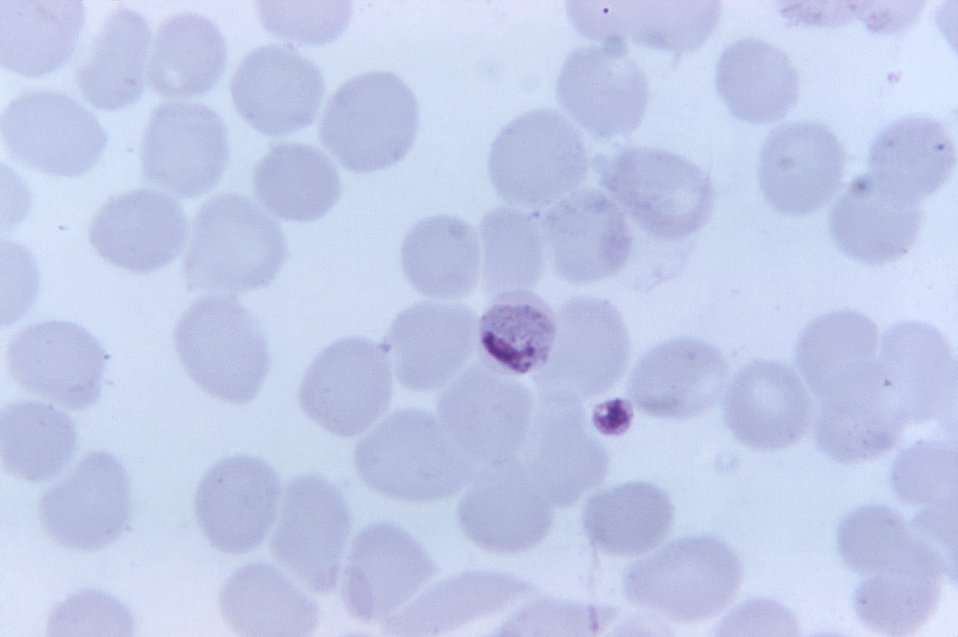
This thin film micrograph depicts a mature Plasmodium malariae trophozoite, using Giemsa stain; Mag. 1125X.